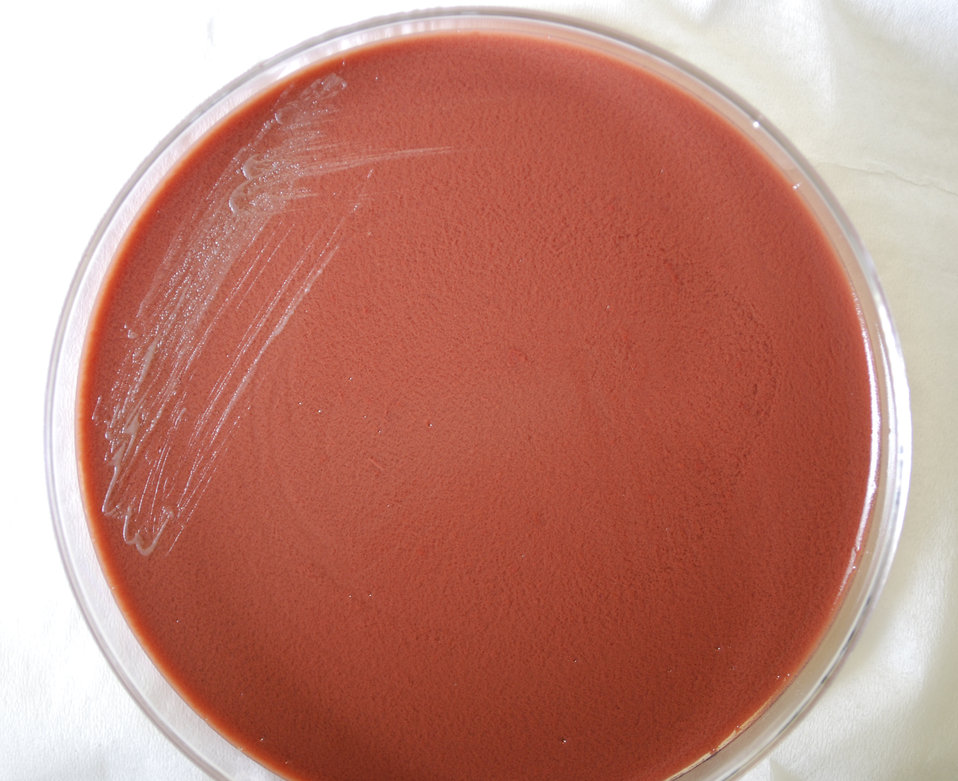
This photograph depicts the colonial morphology displayed by Gram-negative Yersinia pestis bacteria, which was grown on a medium of chocolate agar, for a 24 hour time period, at a temperature of 25�C. For a closer look at these colonies, see PHIL 12213.